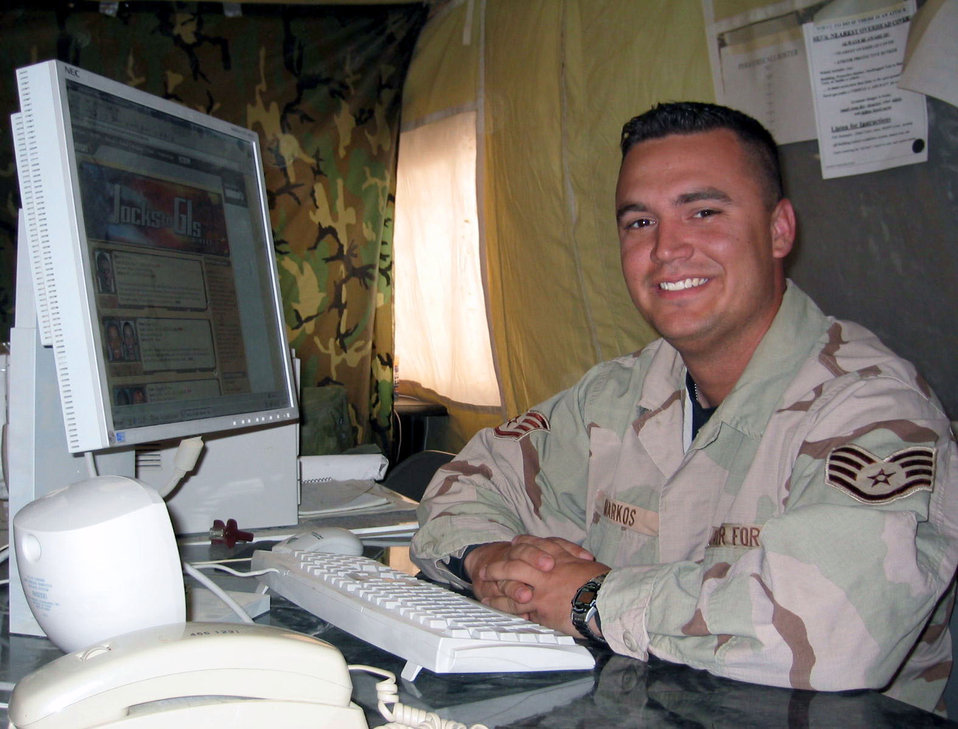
'Jocks-to-GIs'

OPERATION IRAQI FREEDOM -- Staff Sgt. Marty Markos, a personnel specialist forward deployed with the 444th Air Expeditionary Group, is one of the nation's first servicemembers to participate in ESPN's